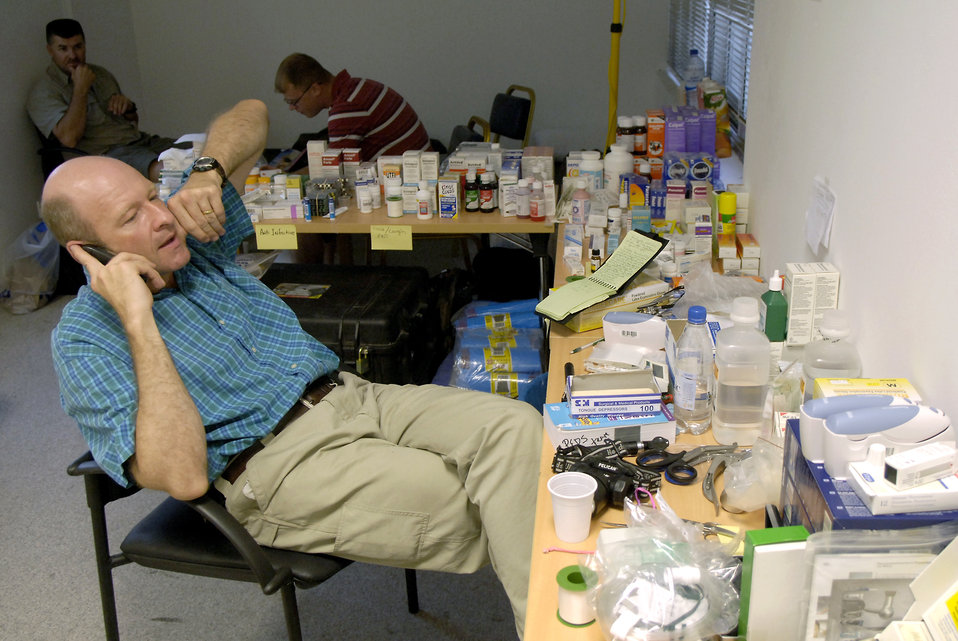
Ramstein medical teams provide humanitarian care

Maj. Joseph Connolly coordinates medical issues over the phone at the Cyprus fairgrounds on Tuesday, July 25. Maj. Connolly is a flight doctor assigned to one of the nine medical teams from the 425th Medical Group at Ramstein Air Base, Germany, that are deployed to Cyprus and providing 24-hour care for American citizens choosing to leave Lebanon.